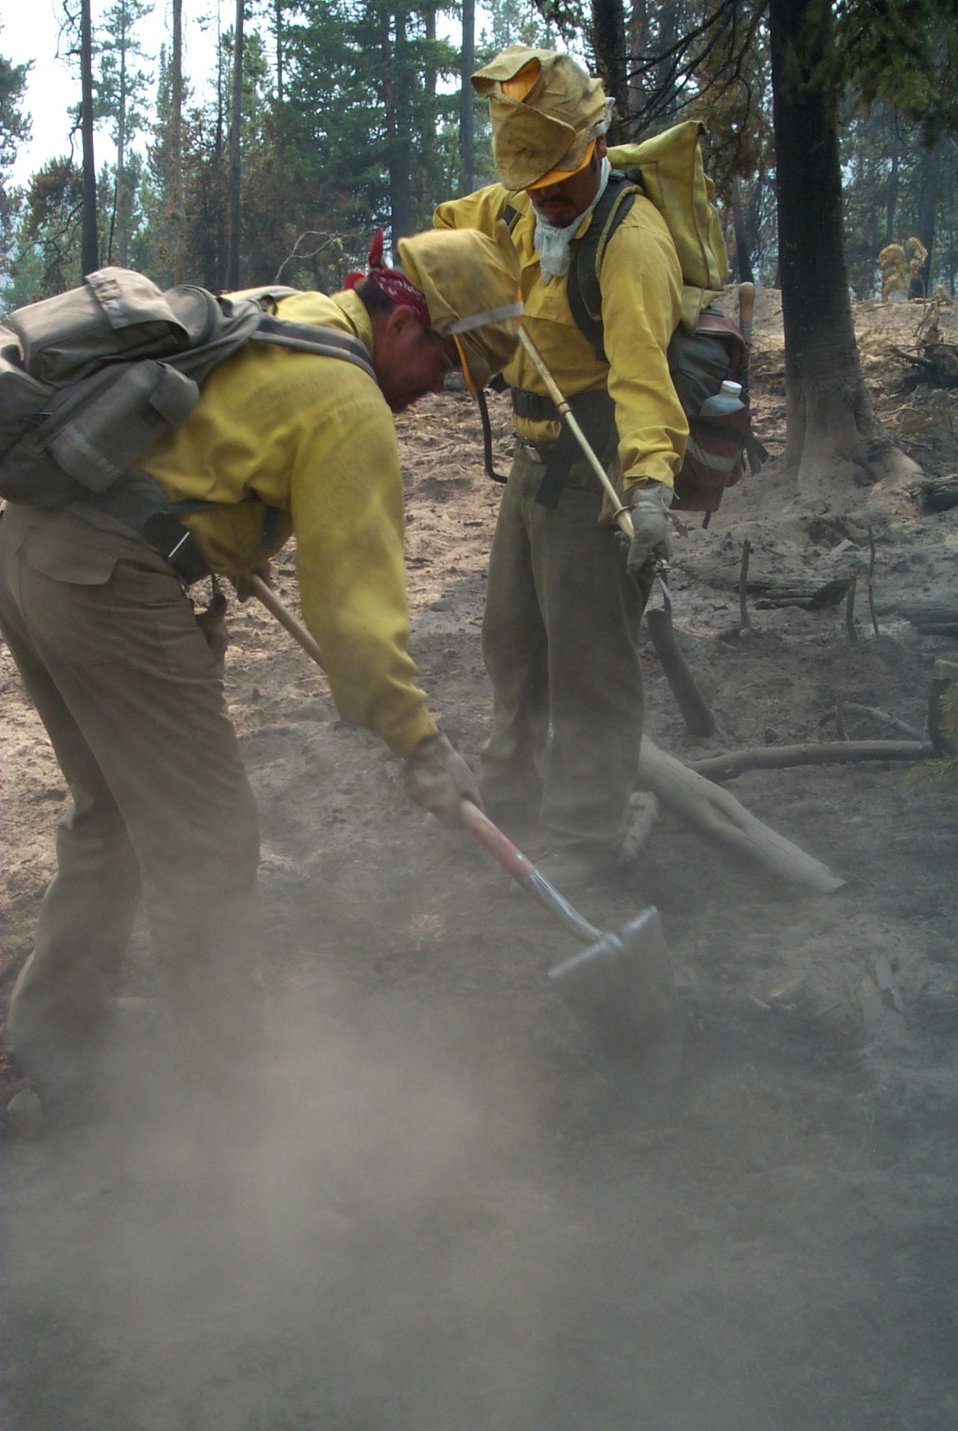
Fire crew Fire Clearwater Fire Salmon Field Office USRD Upper Snake River District